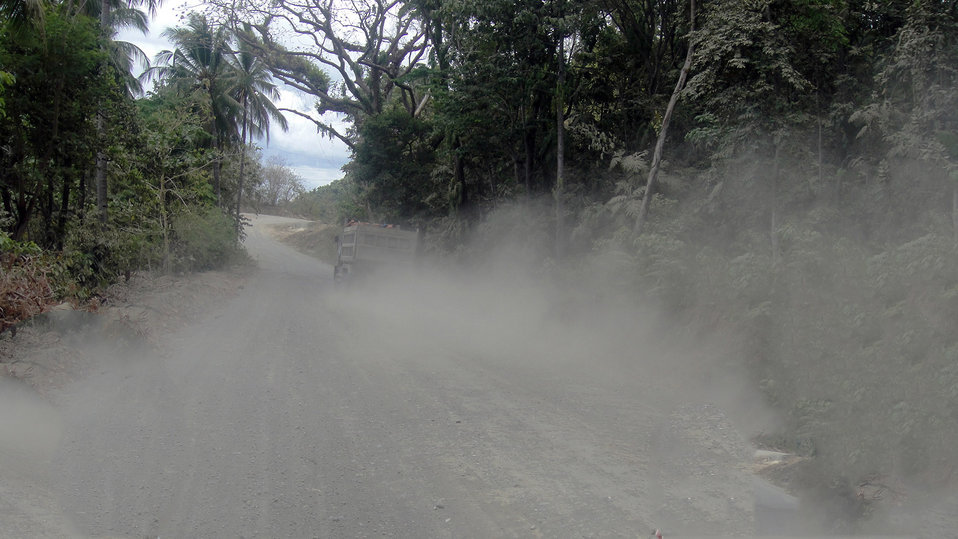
The dusty road.